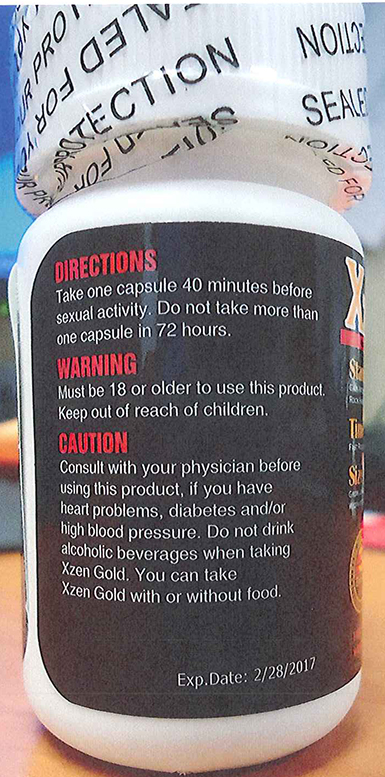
RECALLED – Dietary Supplement

April 1, 2014 – Product Recall – Nova Products, Inc. Issues Voluntary Nationwide Recall of Dietary Supplements with Undeclared Active Pharmaceutical Ingredients.